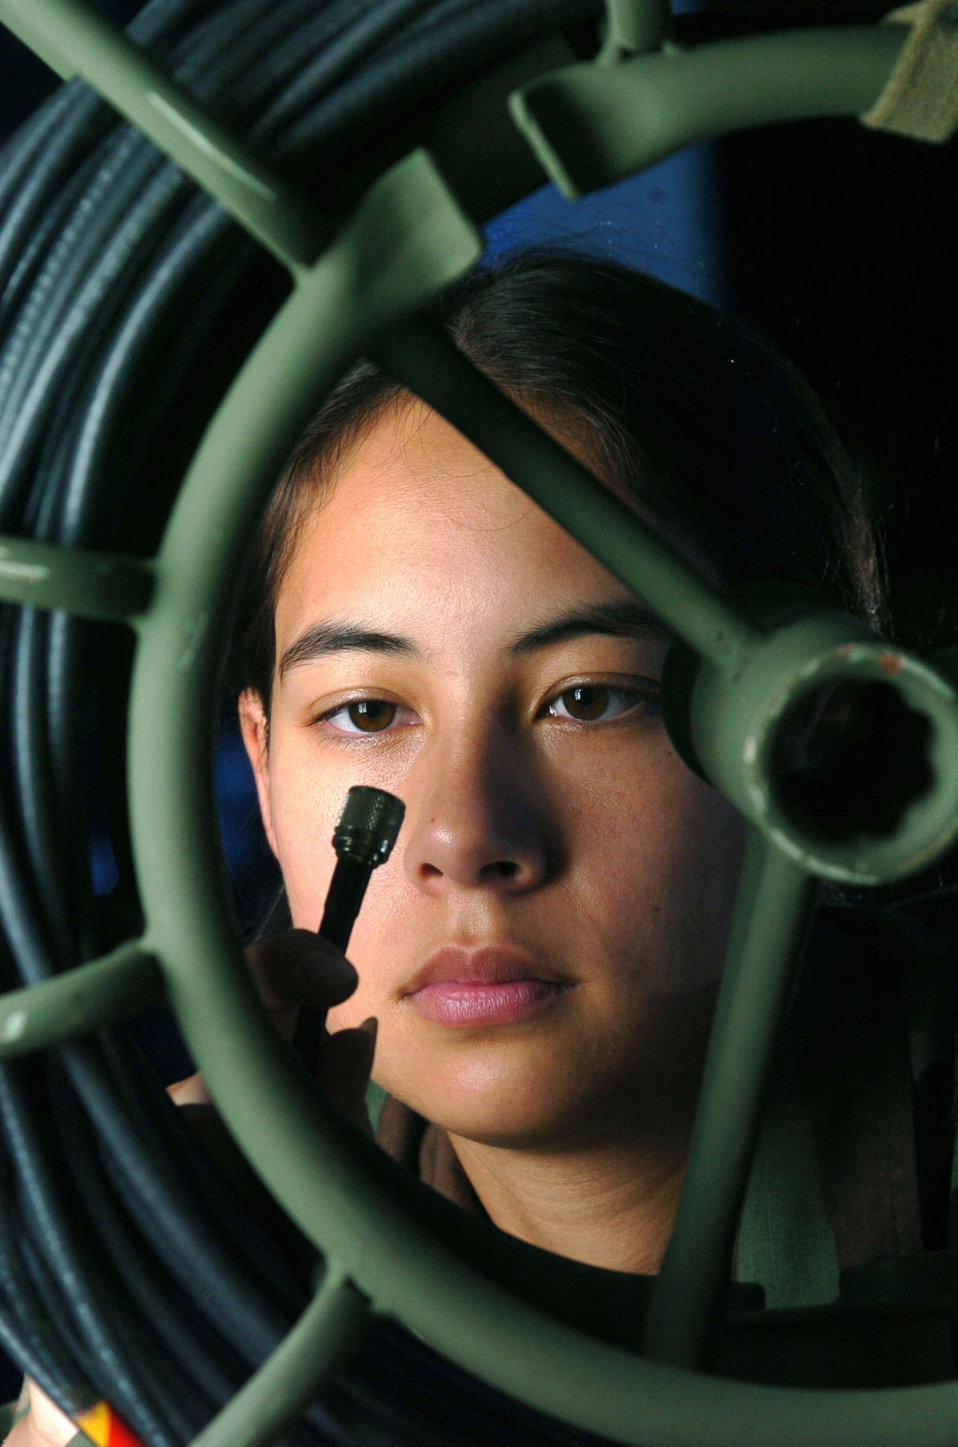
Eye spy

KADENA AIR BASE, Japan -- Senior Airman Kristina Paliwoda inspects a coaxial cable end for damage here Sept. 15. The 353rd Operation Support Squadron prepares joint and combined operations, communications, intelligence and logistics support plans for U.S. Air Force special operations and unconventional warfare forces in the Pacific Region. Airman Paliwood is a theatre deployable communications technician from the 353rd OSS.